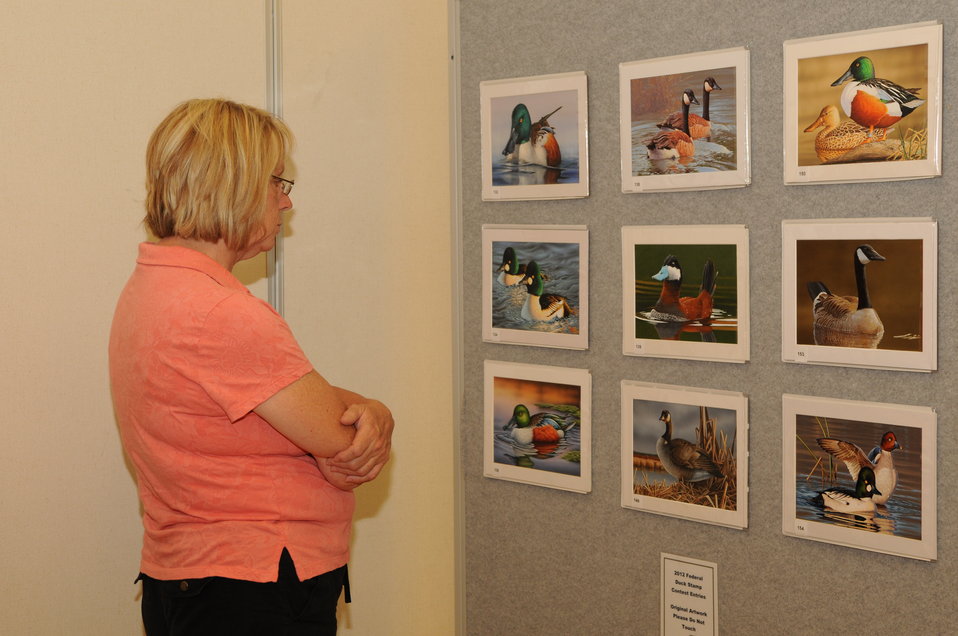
Artwork Viewing

The U.S. Fish & Wildlife Service sponsored the 2012 Federal Duck Stamp Art Contest September 28 and 29 in Ogden, Utah, at Weber State University. A panel of five judges was responsible for choosing the art work used to design the 2013-2014 Migratory Bird Hunting and Conservation Stamp.